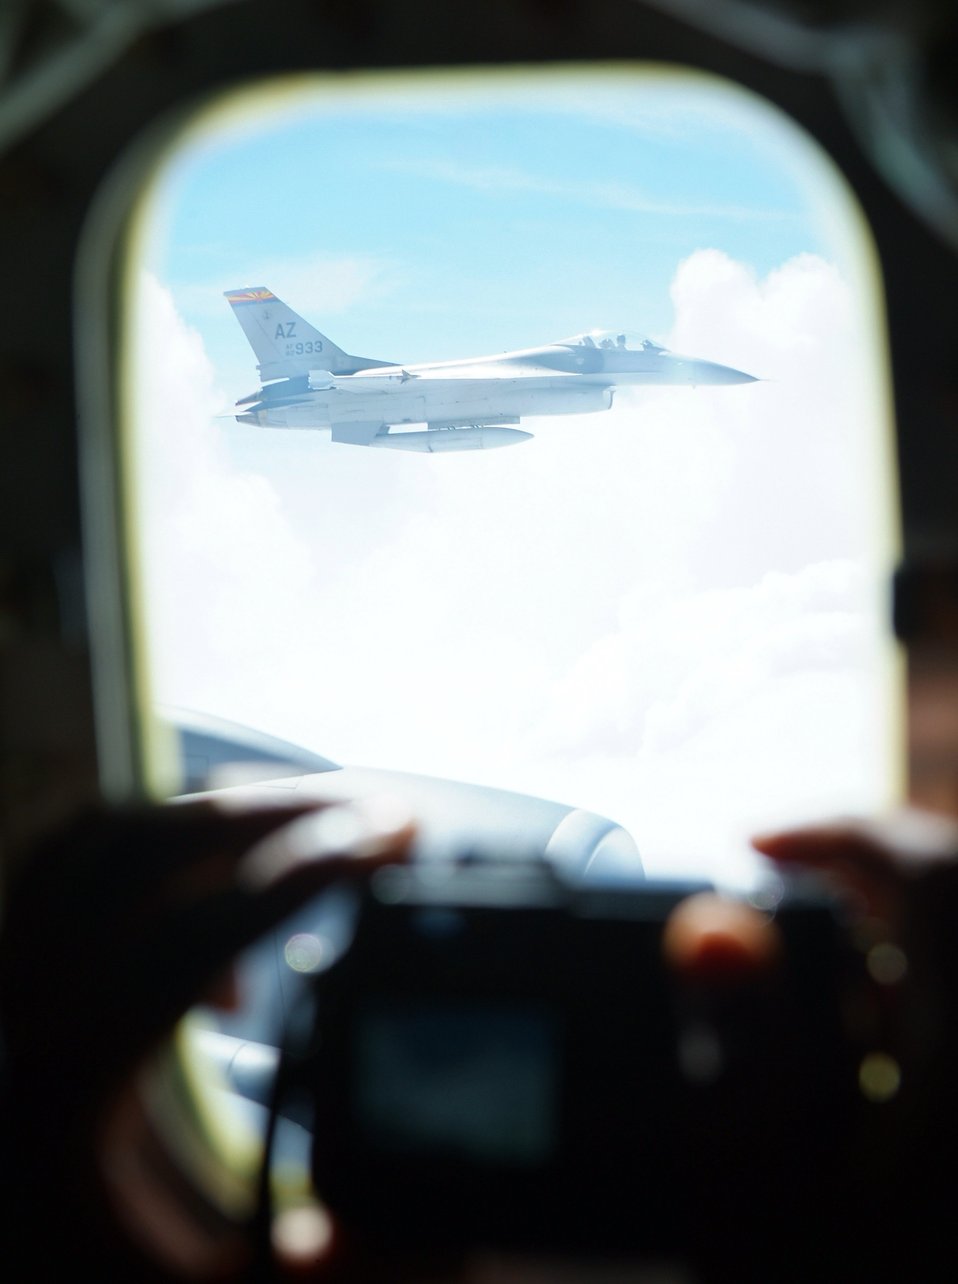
CAP cadets soar on incentive flight

A Civil Air Patrol cadet takes a photo of an F-16 Fighting Falcon during an incentive flight on a KC-135 Stratotanker for students in the CAP and Aviation Careers Education Camp in Phoenix on Aug. 1. The camp was held in conjunction with the Tuskeegee Airmen Convention. Both aircraft are with the Arizona Air National Guard.